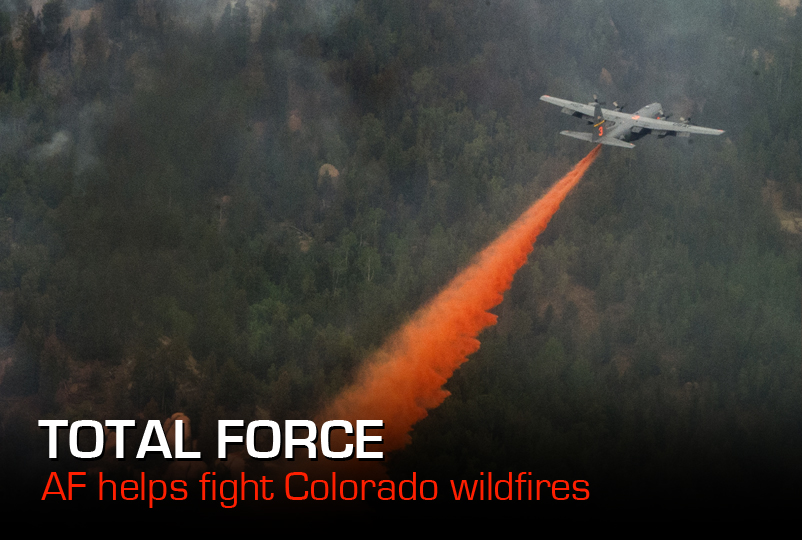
Total Force